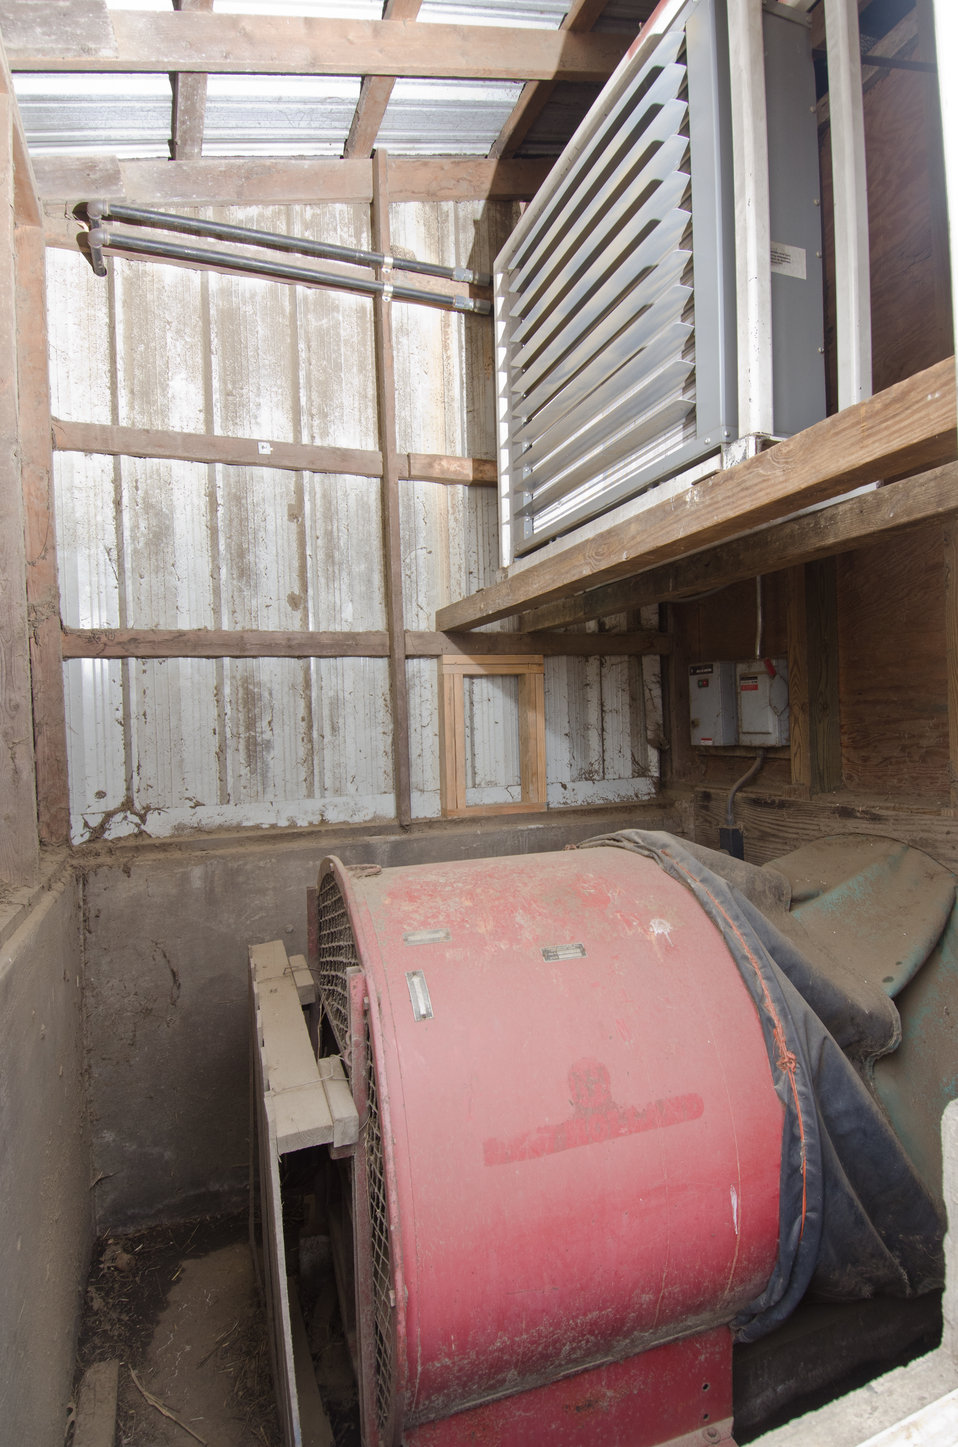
Heat exchanger heats, cools and dries as needed for processing products at Heidel Hollow Farms, on Wednesday, April 20, 2011. A family owned farm since 1852 is an 1,800 acre operation in Germansville, PA. Led by David Fink, President of Heidel Hollow Farms, they mainly produce and compact hay for export and grow produce on 300 acres for local sale. With the financial help of the U.S. Department of Agriculture (USDA) an 896 panel solar array was recently installed on non farmable diversion ditches. Rated at 200 kilowatts, they project 240 megawatts of electricity to be produced each year, providing up to 70% of the farms electrical needs. Additionally, USDA financial assistance made it possible to replace the hay compactor’s diesel engines with clean low-maintenance, low operating cost electric motors to power the compactor's hydraulic system. The compactor increases the density of baled hay by two and half times for more efficient shipping to overseas customers.